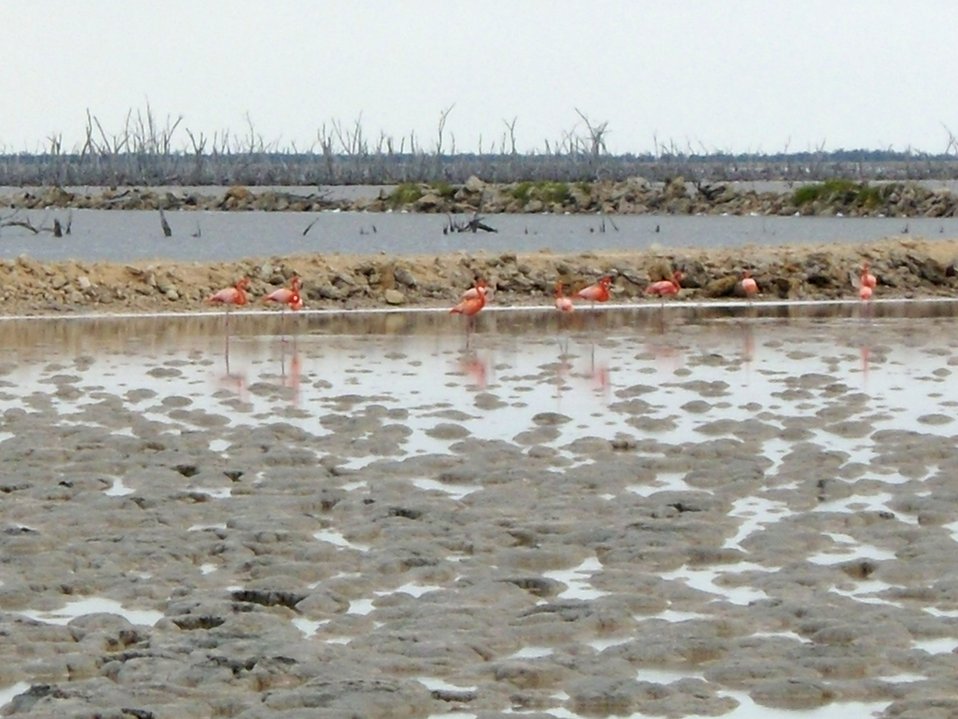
Greater flamingos in salt ponds.

Great Inagua has one of the largest populations of this greater flamingos in the world.